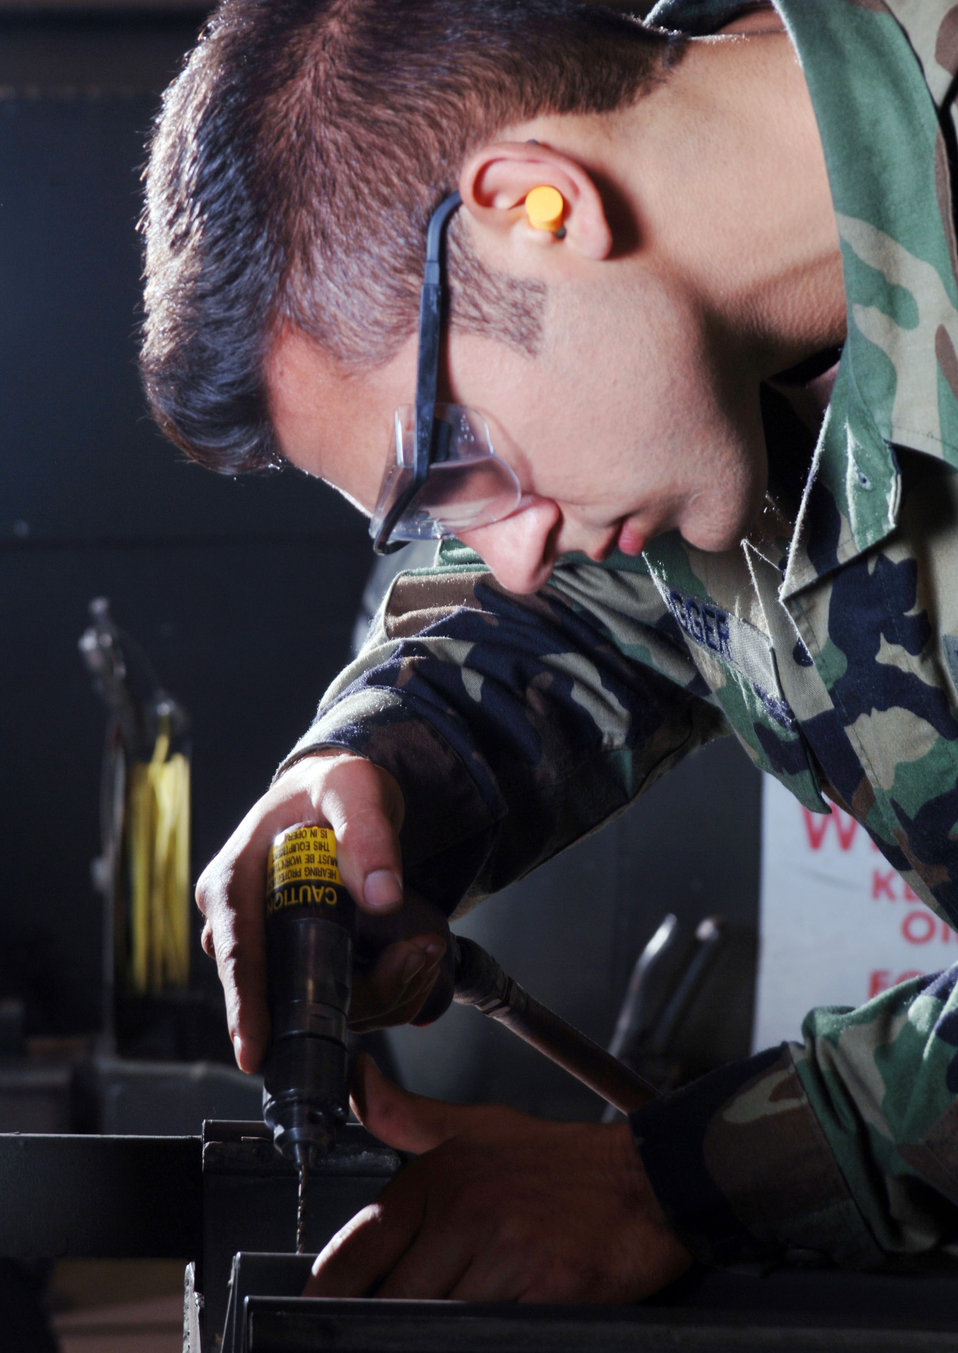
Backshop

YOKOTA AIR BASE, Japan (AFPN) -- Senior Airman Buck Dugger drills holes on an oxygen cart during repair work here. Airman Dugger is assigned to the 374th Maintenance Group's aircraft structural maintenance element. The element is responsible for structural repair and corrosion prevention of C-130 Hercules assigned here and the more than 200 aircraft that transit here annually.